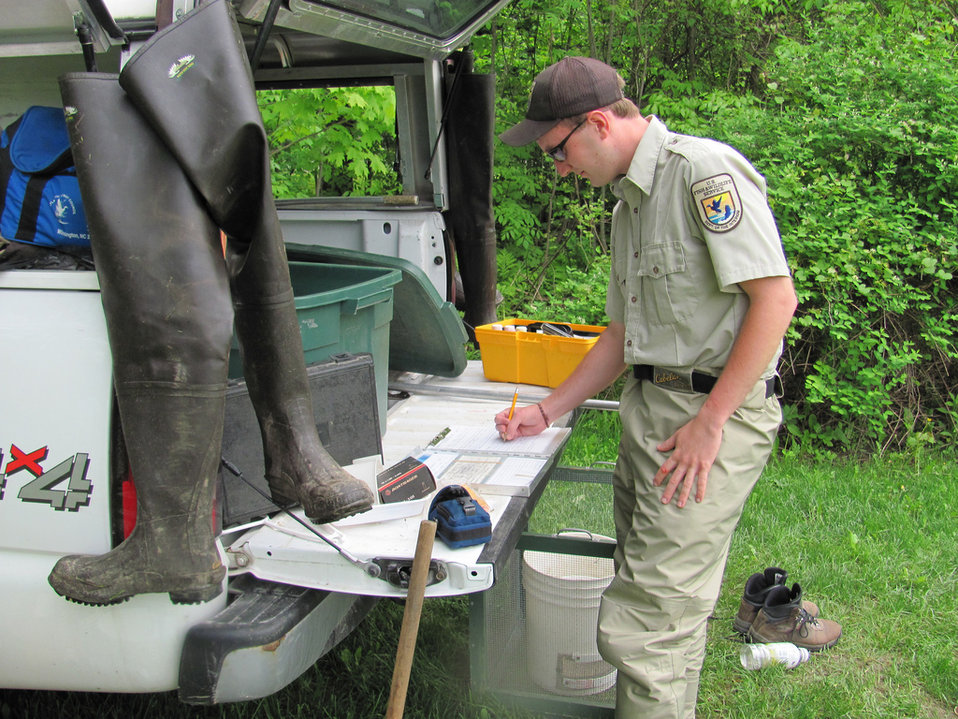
Field work

U.S. Fish and Wildlife Service